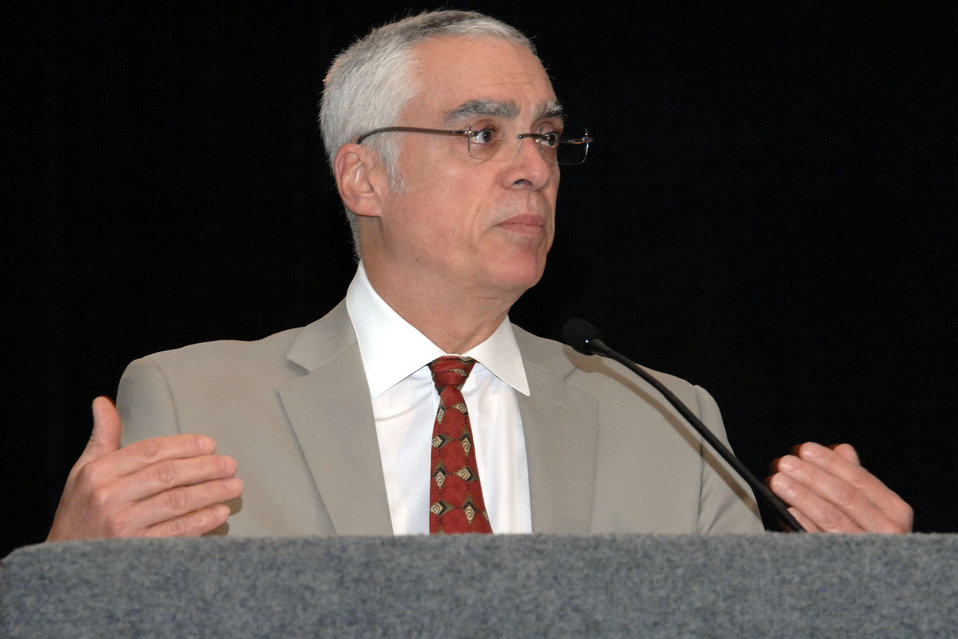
Deputy Administrator Perciasepe at Climate Change Summit

US EPA Deputy Administrator Bob Perciasepe speaks during a panel at the Southeast Florida Regional Climate Leadership Summit in Fort Lauderdale, Florida